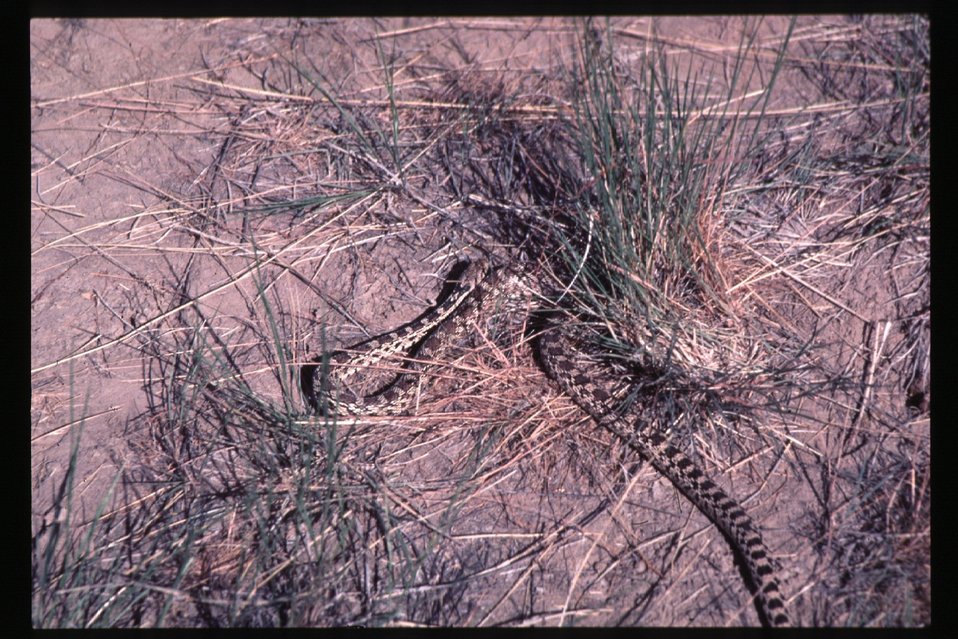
Snake in desert Wildlife USRD Upper Snake River District